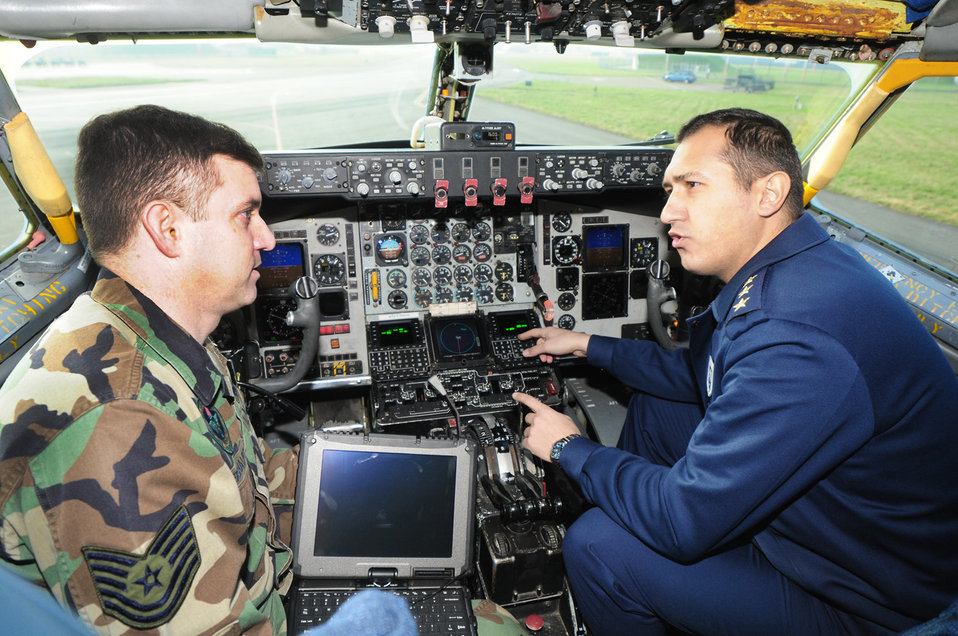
KC-135 avionics upgrade helps strengthen bond between U.S., Turkish air forces

Tech. Sgt. Gary Weishaupt answers questions from a captain in the Turkish air force in the cockpit of a KC-135 Stratotanker March 2, 2011, at Royal Air Force Mildenhall, England. Several Turkish air force and civilian members were here for a two-week course, learning about the Global Air Traffic Management avionics upgrade. The Turkish airmen will receive their first upgraded jet within the next month. Sergeant Weishaupt is a 373rd Training Squadron, Det. 19 communication navigation mission systems master instructor.